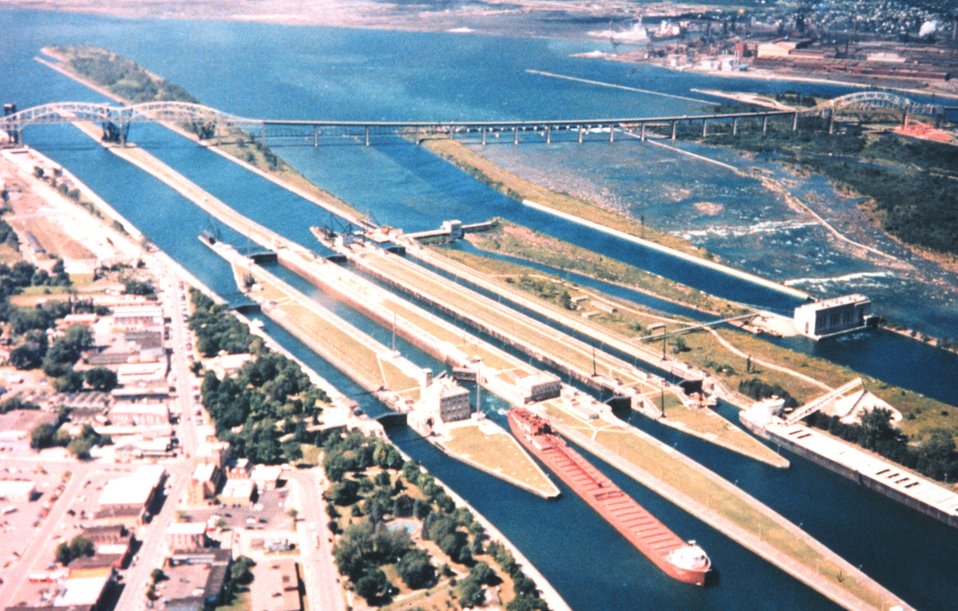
Sault Ste. Marie locks